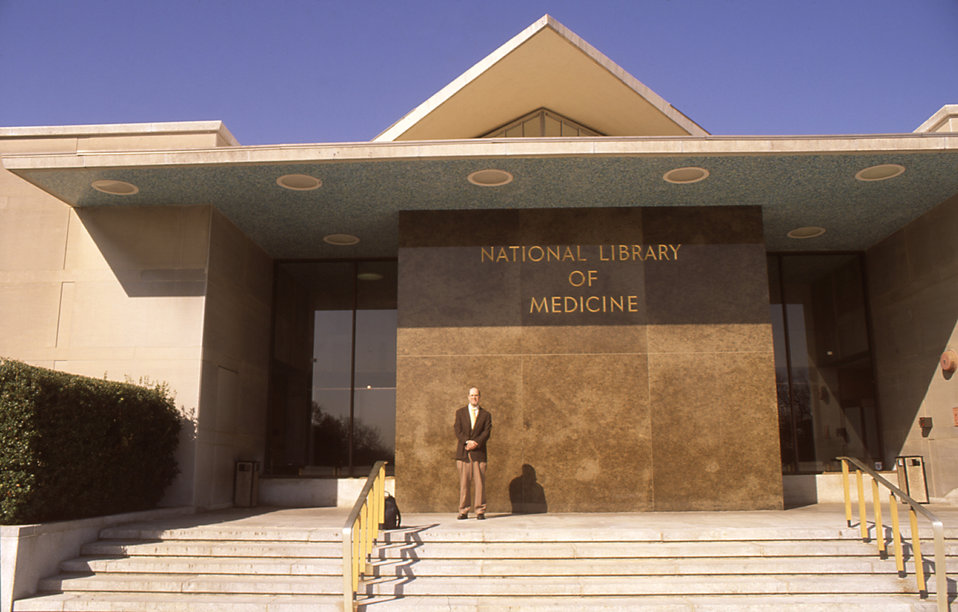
This 1999 photograph depicted M. Barry Rhodes, Ph..D., while on a visit to the National Library of Medicine (NLM), located on the campus of the National Institutes of Health in Bethesda, Maryland, as he was standing outside the facility. It is the world's largest medical library, collecting materials, and providing information and research services in all areas of biomedicine and health care.The NLM's MedlinePlus� online database, can help consumers find information on health topics of all kinds, including diseases, wellness, hospitals, physicians, and pharmaceuticals. NLM also coordinates the National Network of Libraries of Medicine, which provides health care professionals and the public equal access to biomedical and health care information resources.